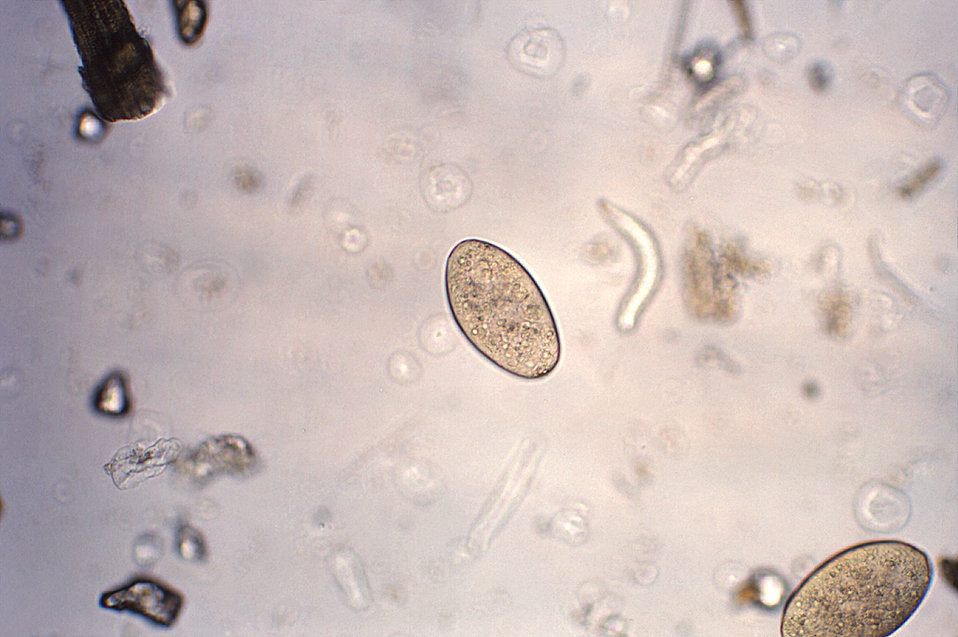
Magnified 128X this photomicrograph revealed the presence of two trematode, Fasciolopsis buski, eggs, which are described as broadly ellipsoidal, operculated and measuring 130�m to 150�m long, by 60 �m to 90�m wide. The eggs are unembryonated when passed in feces. The eggs of F. buski can be difficult to distinguish from Fasciola hepatica, although the abopercular end of the latter often has a roughened or irregular area.